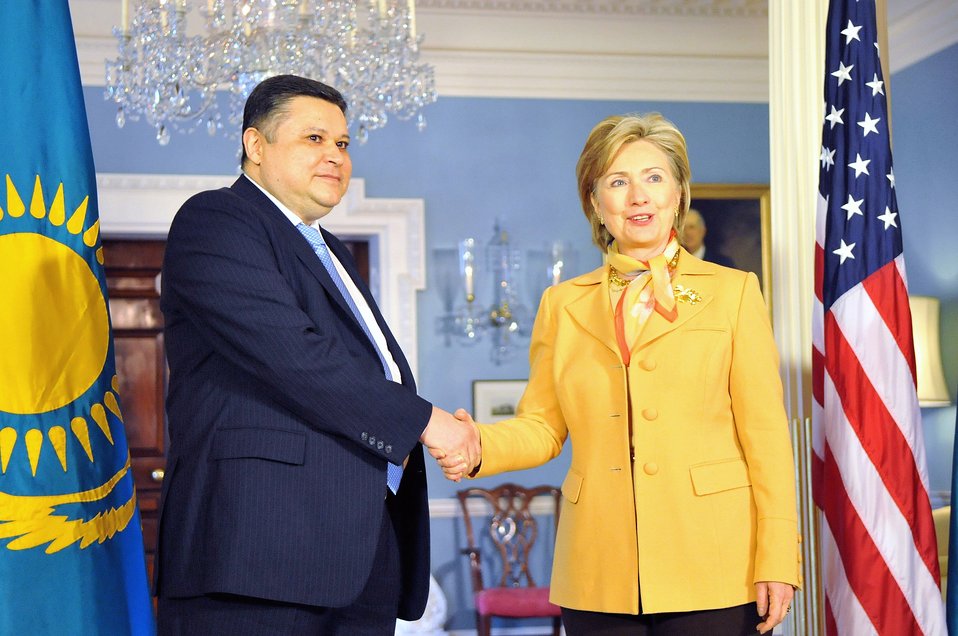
Secretary Clinton Meets With Kazakh Foreign Minister

U.S. Secretary of State Hillary Rodham Clinton hosts a bilateral meeting with Kazakh Foreign Minister Marat Tazhin in the Treaty Room of the U.S. Department of State in Washington, DC May 5, 2009.